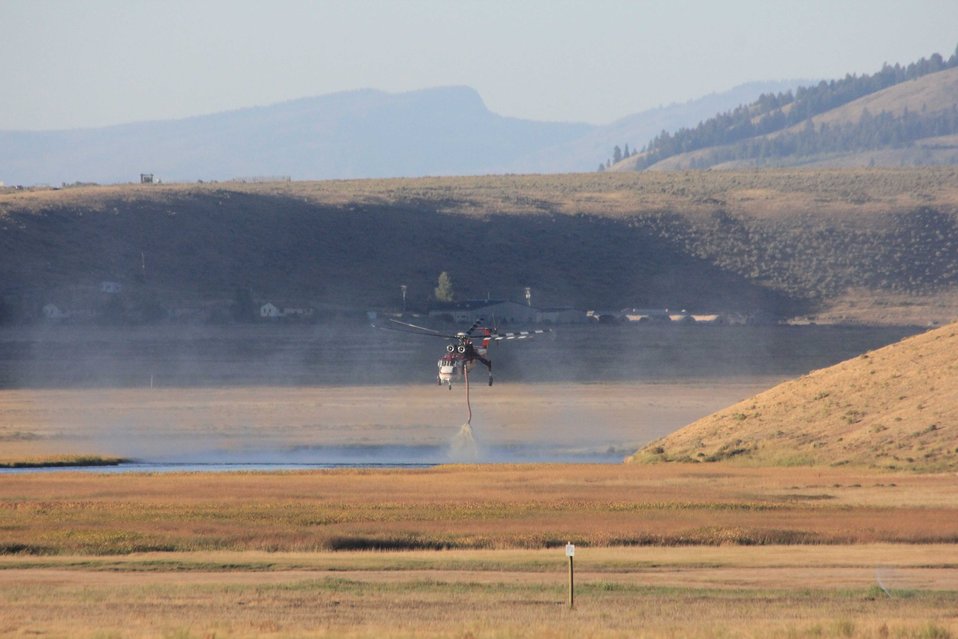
Nowlin Creek

Early in the fire suppression efforts, pilots used Nowlin Creek as a water source for helicopter bucket work. Here, the helicopter draws water from the southern end of Miller Butte, approximately one mile north of the refuge's entrance on Broadway Street in Jackson.

Credit: USFWS / Tony Hough, National Elk Refuge volunteer